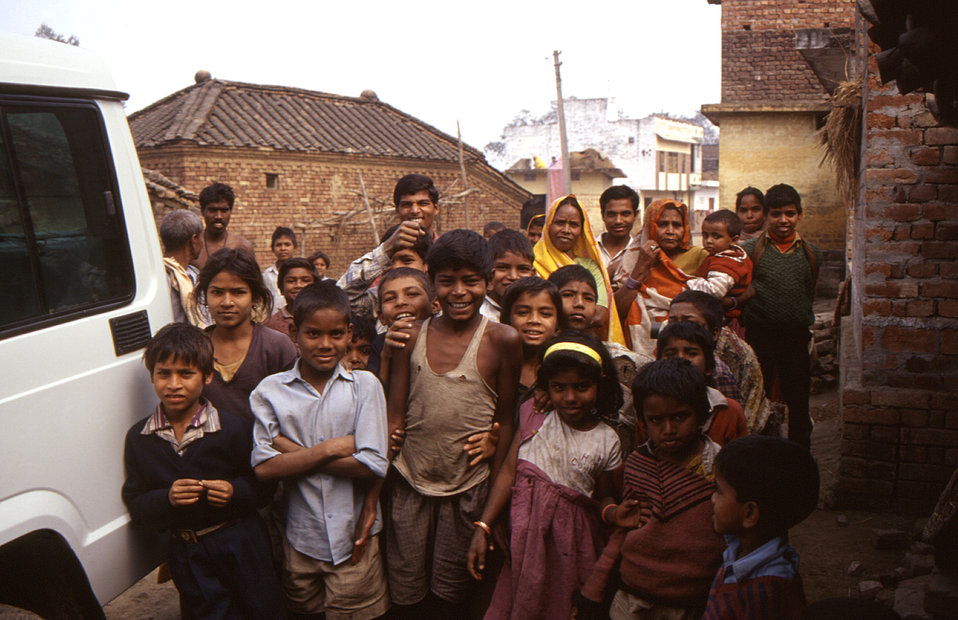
Comprised primarily of children, this crowd of local residents gathered when they saw the Stop Transmission of Polio (STOP) team van arrive in their village, in order to investigate suspected polio cases.The image was provided by Chris Zahniser, B.S.N., R.N., M.P.H., a STOP team member and photographer, who was assigned to the state of Uttar Pradesh in northern India, and spent three months working in the Districts of Gorakhpur and Deoria.